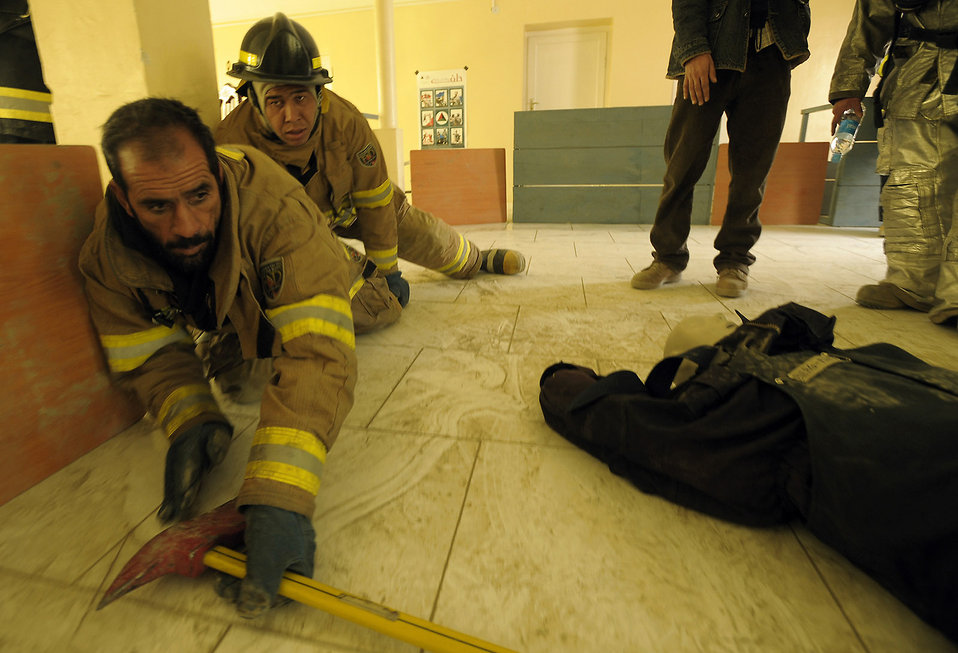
Operation Enduring Freedom

Two Afghan National Army Air Corps firefighters simulate locating a victim in a smoke filled room during a demonstration at the Afghan Joint Fire Academy in Kabul, Afghanistan, recently.